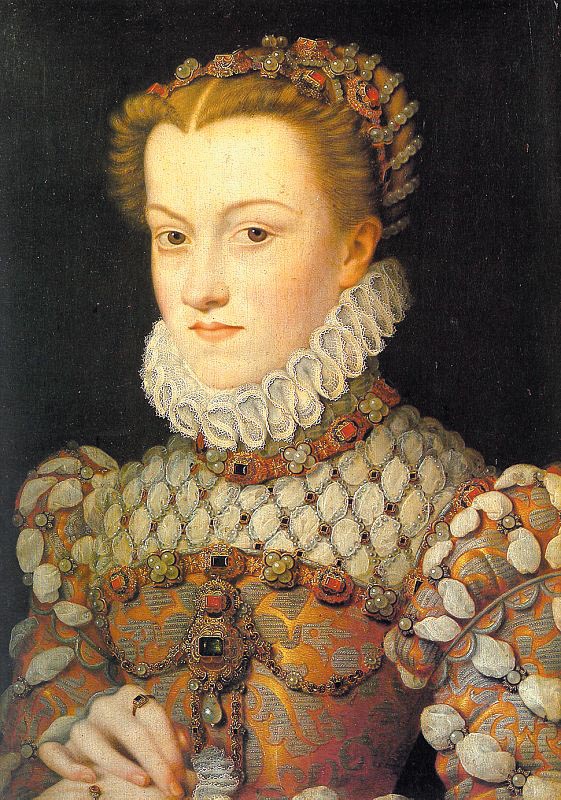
Elisabeth of Austria France1